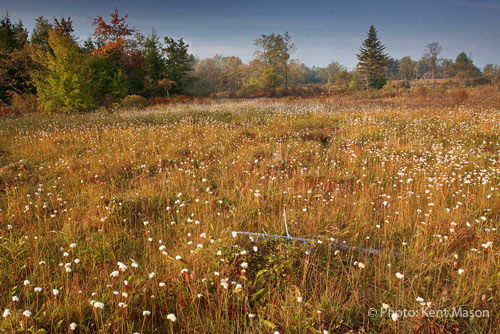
Field of Cottongrass

Cottongrass is a sedge even though it has slender, grass-like leaves. The seed heads are covered in a fluffy mass of cotton which are carried on the wind to aid dispersal.